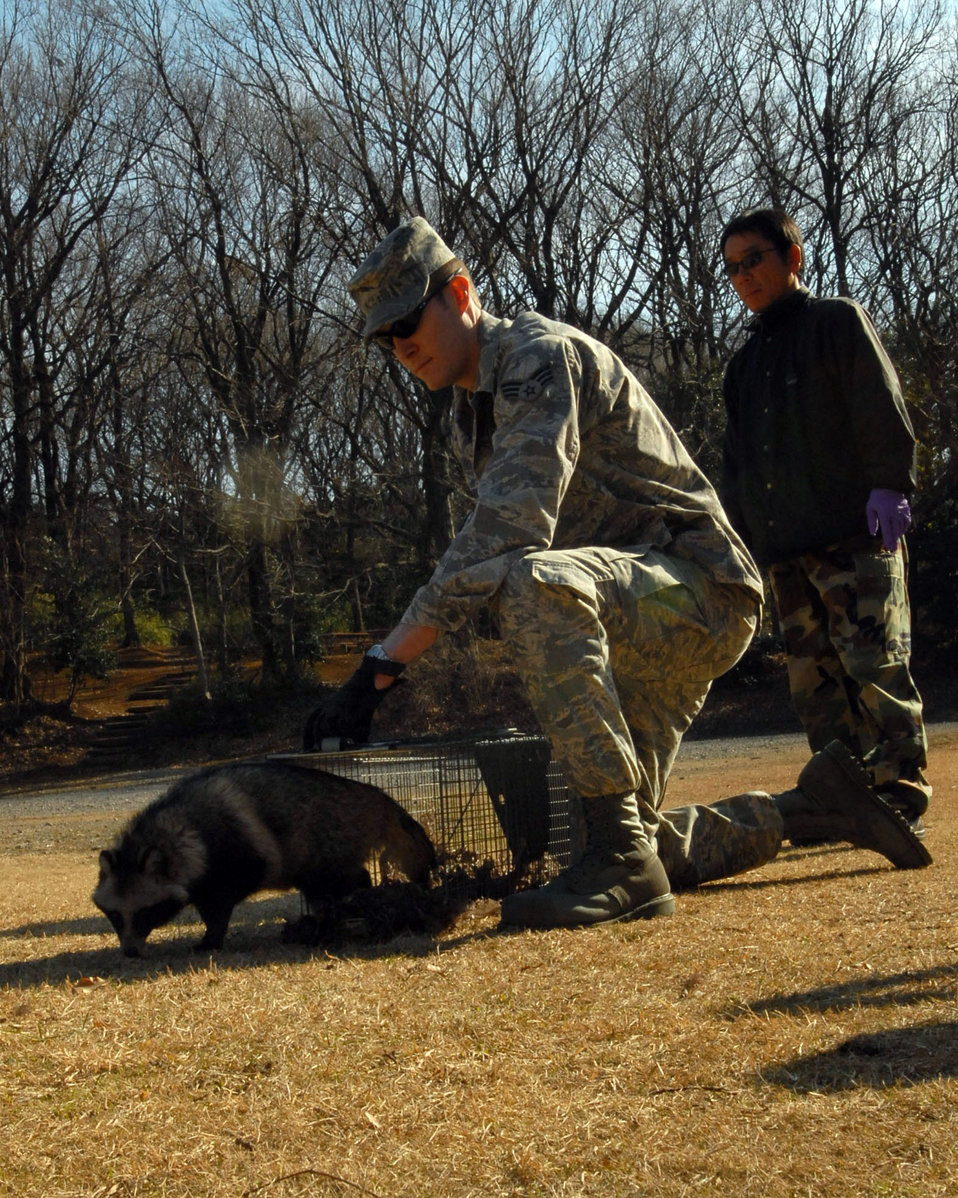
Yokota trespassers caught, detained, released

Senior Airman Mark Bashaw prepares to release a raccoon dog Jan. 8 in the forest at the Tama Hills Recreation Area on Yokota Air Base, Japan. The raccoon dog was captured Jan. 6. Airman Bashaw's job is to remove wild animals from the base to keep the airfield clear and the pet population safe. Airman Bashaw is assigned to the 374th Civil Engineer Squadron pest management office.